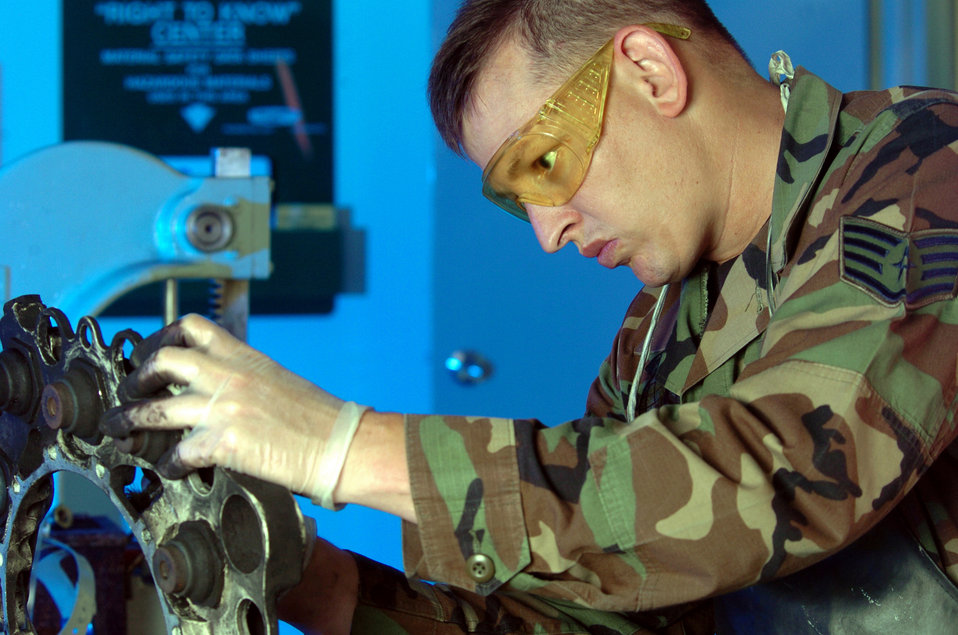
Gimme a brake

YOKOTA AIR BASE, Japan -- Staff Sgt. James Christner disassembles a C-130 Hercules brake assembly carrier during an inspection here. The Airmen of the 374th Maintenance Squadron's pneudraulics element overhaul, modify and test all pneudraulics components of C-130s assigned and in-transit here.